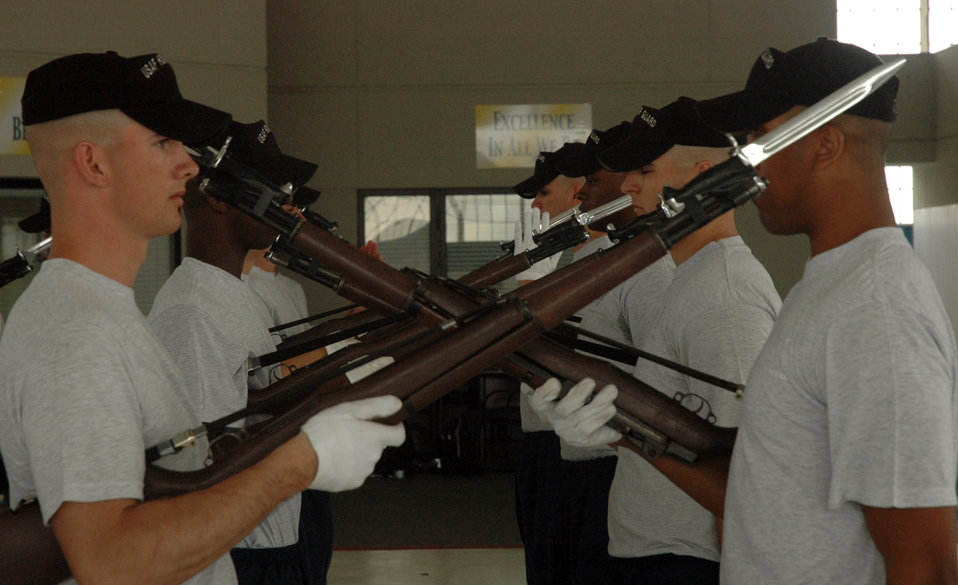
Drill team prepares for upcoming drill season

Members of the Air Force Honor Guard drill team practice their newest routine March 30 during annual training held at Maxwell Air Force Base, Ala. The traveling component of the Air Force Honor Guard, the drill team serves as Air Force ambassadors to recruit, retain and inspire Airmen around the globe.